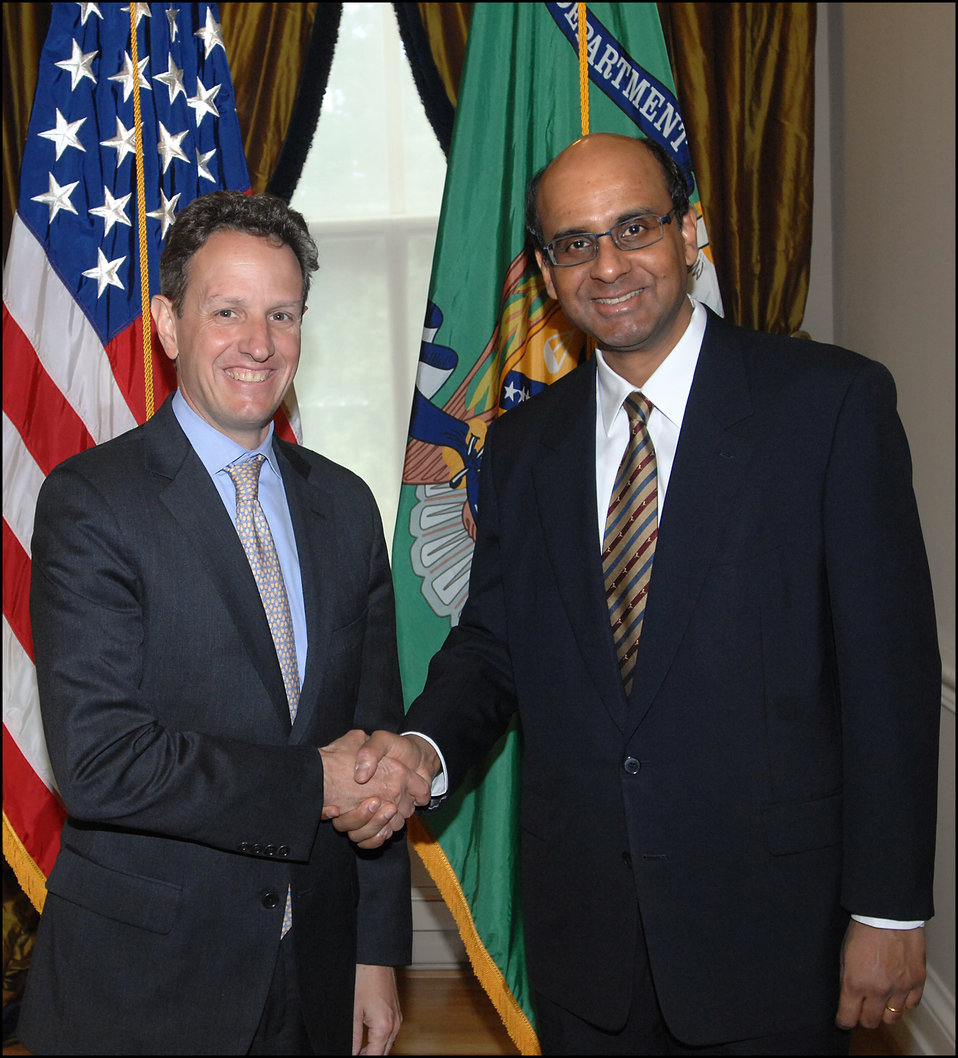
Singaporean Finance Minister Tharman

On August 5, 2009, Secretary Geithner met with Singaporean Finance Minister Tharman.